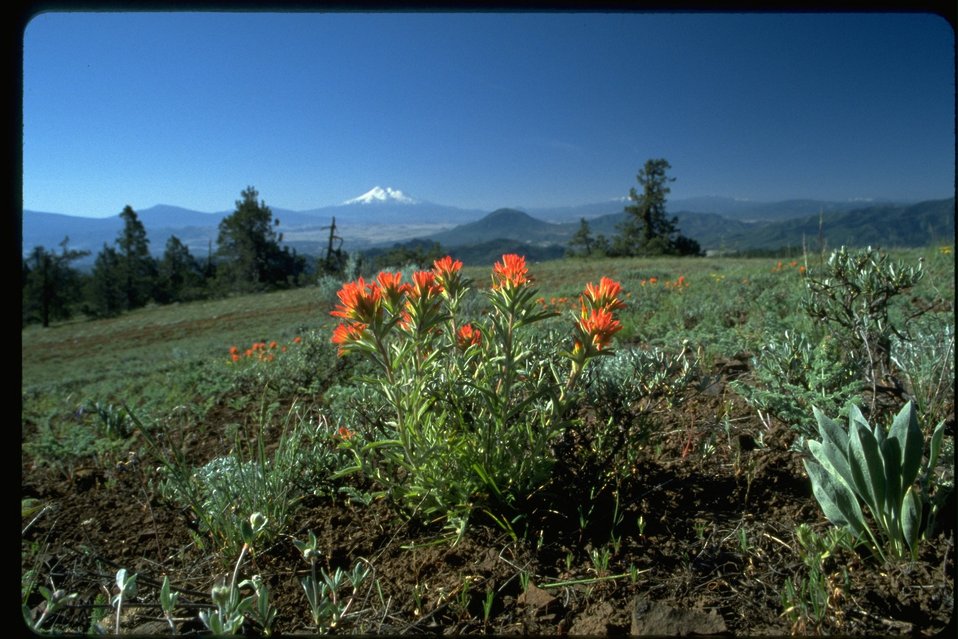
Medium shot of Indian Paintbrush with Mt. Shasta in background, Cascade-Siskiyou National Monument (CSNM).